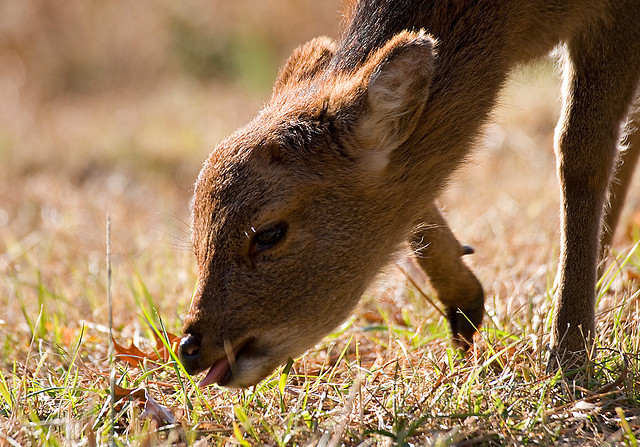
sika deer

Young sika deer grazing, Chincoteague National Wildlife Refuge, VA